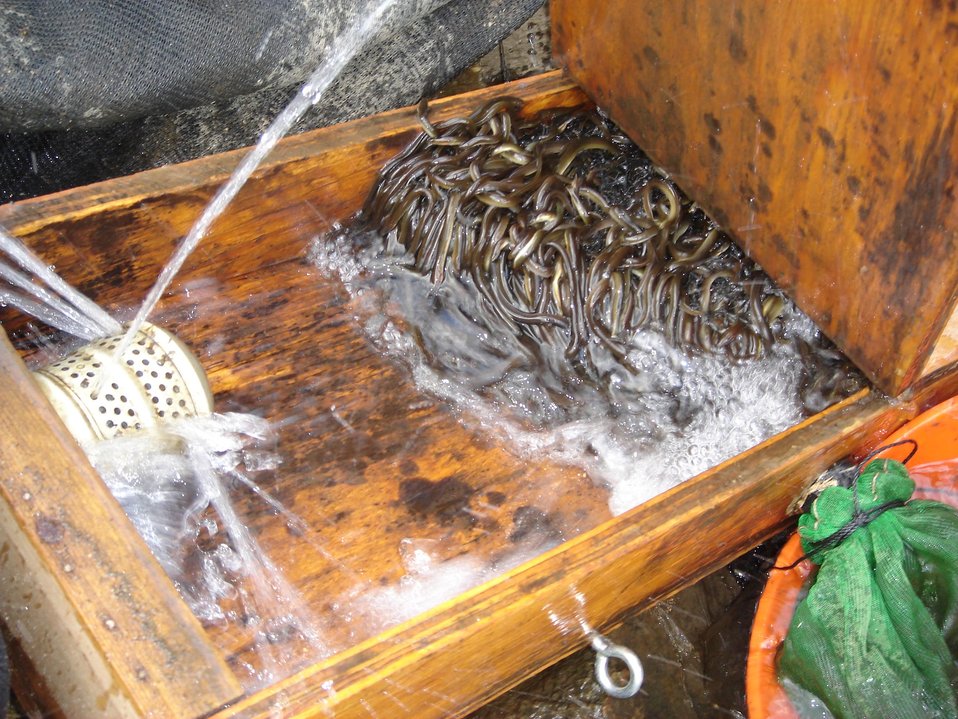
American eel

Juvenile eels--elvers--in a ramp for passage study at Conowingo Dam.